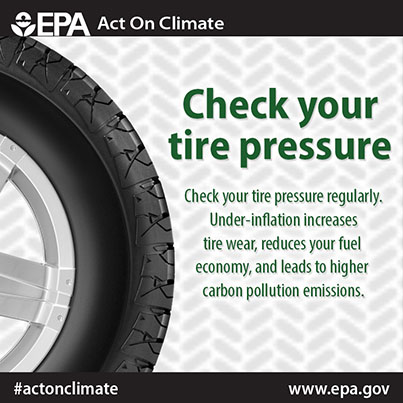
Check your tire pressure to #ActOnClimate and improve your fuel economy! #ActOnClimate www.epa.gov/earthday/actonclimate/